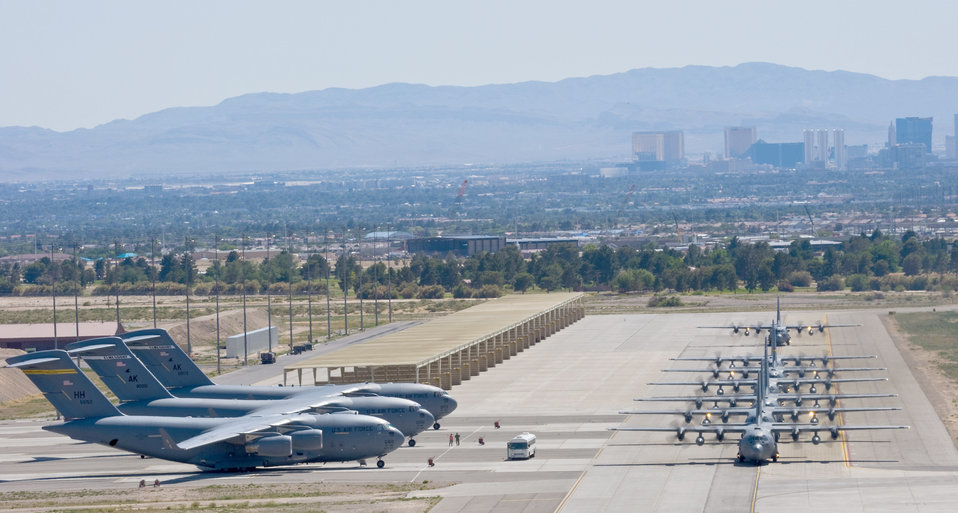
Mobility Air Forces exercise

A line of C-130 Hercules taxi during the Mobility Air Forces exercise May 19, 2010, at Nellis Air Force Base, Nev. The aircraft flew over the Nevada Test and Training Range to conduct air and ground operations.